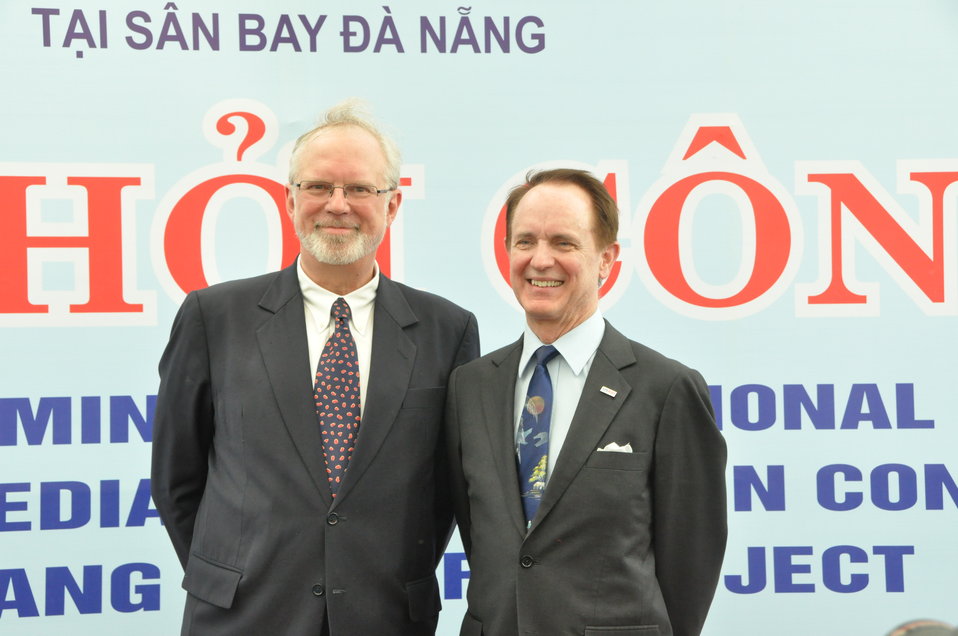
U.S. Ambassador David B. Shear, left, and USAID Director Francis Donovan at the launch event

Danang, August 9, 2012